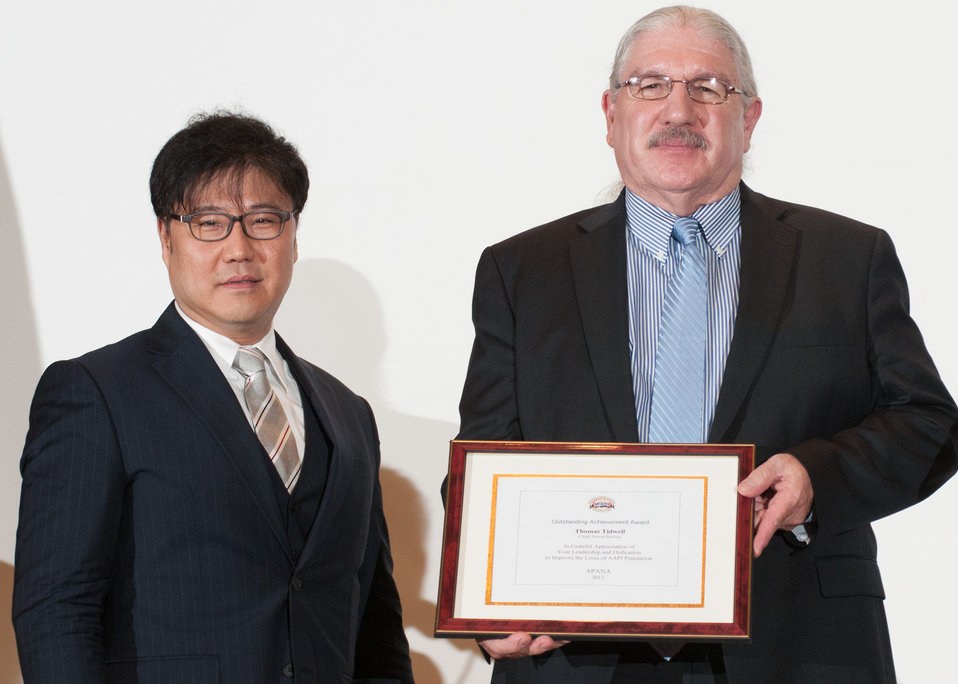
Asian Pacific American Network in Agriculture (APANA) President Justin Rhee, left, presents an “Outstanding Achievement Award” for leadership and dedication to improve the lives of the Asian Americans and Pacific Islander (AAPI) population, to U.S. Department of Agriculture’s (USDA) Natural Resources and Environment (NRE), Deputy Under Secretary Arthur 'Butch' Blazer, who is accepting for Forest Service Chief Thomas Tidwell, during the USDA Asian Pacific American Heritage Month Observance, at the USDA headquarters in Washington, D.C., on Thursday, May 23, 2013. Led by Chief Tidwell, the National Leadership Council at Forest Service began to create inclusive and diverse culture for the Agency. This year’s theme is “Building leadership; Embracing the Cultural Values and Inclusions.”